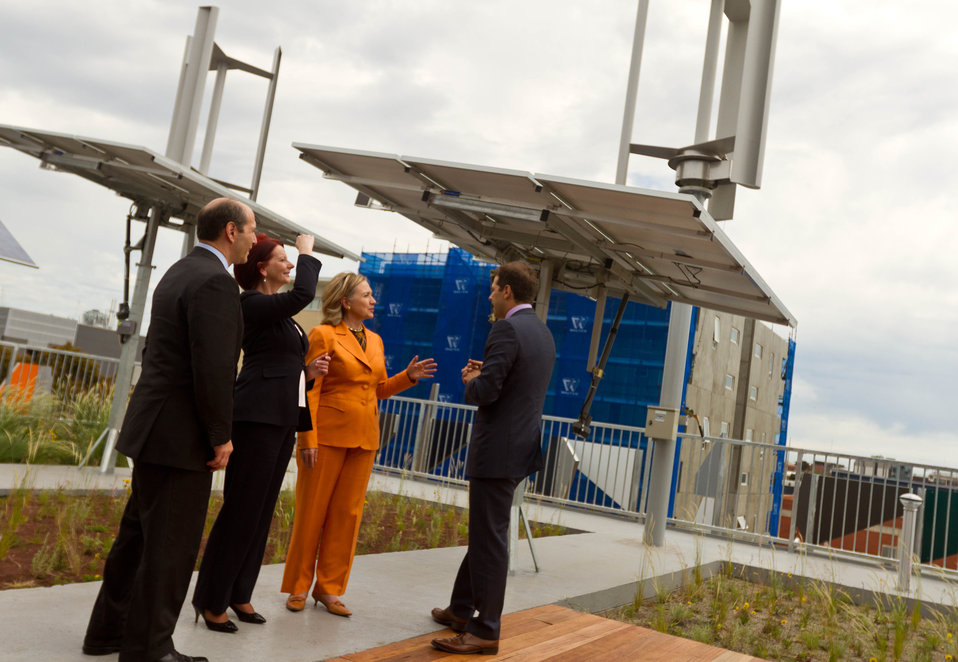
Secretary Clinton, Australian Prime Minister Gillard, and Ambassador Bleich Are Greeted By Grocon CEO Grollo

U.S. Secretary of State Hillary Rodham Clinton (right), Prime Minister Julia Gillard (center), and U.S. Ambassador to Australia Jeff Bleich (left) are greeted by Grocon CEO Daniel Grollo at the Pixel building in Melbourne, Australia, on November 7, 2010.